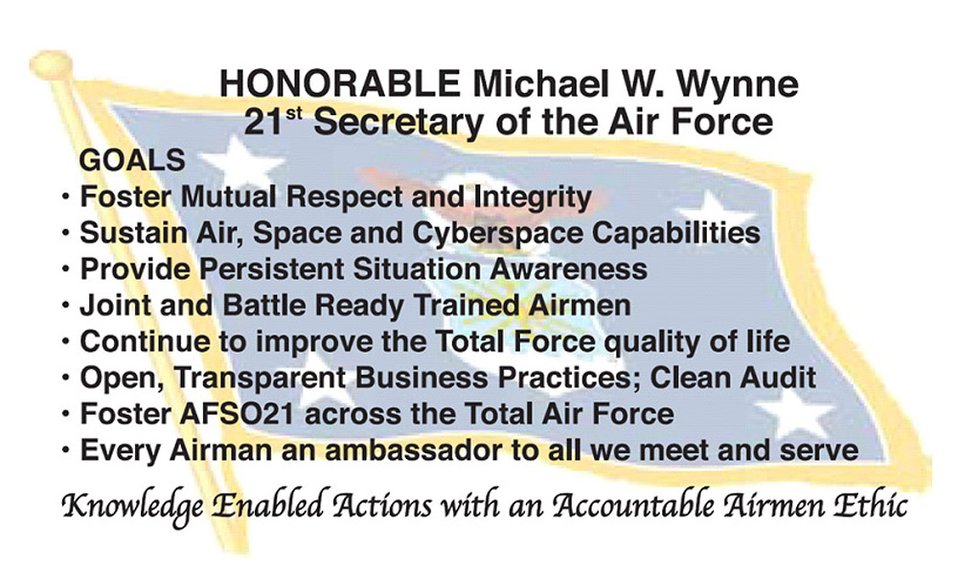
SECAF emphasizes Air Force goals with card

When Secretary of the Air Force Michael W. Wynne spoke at his town hall meeting at the Pentagon earlier this year, he discussed some of the issues facing the Air Force today, as well as its strengths and his goals for 2007. One of the ways he's spreading those goals is through a mission, or